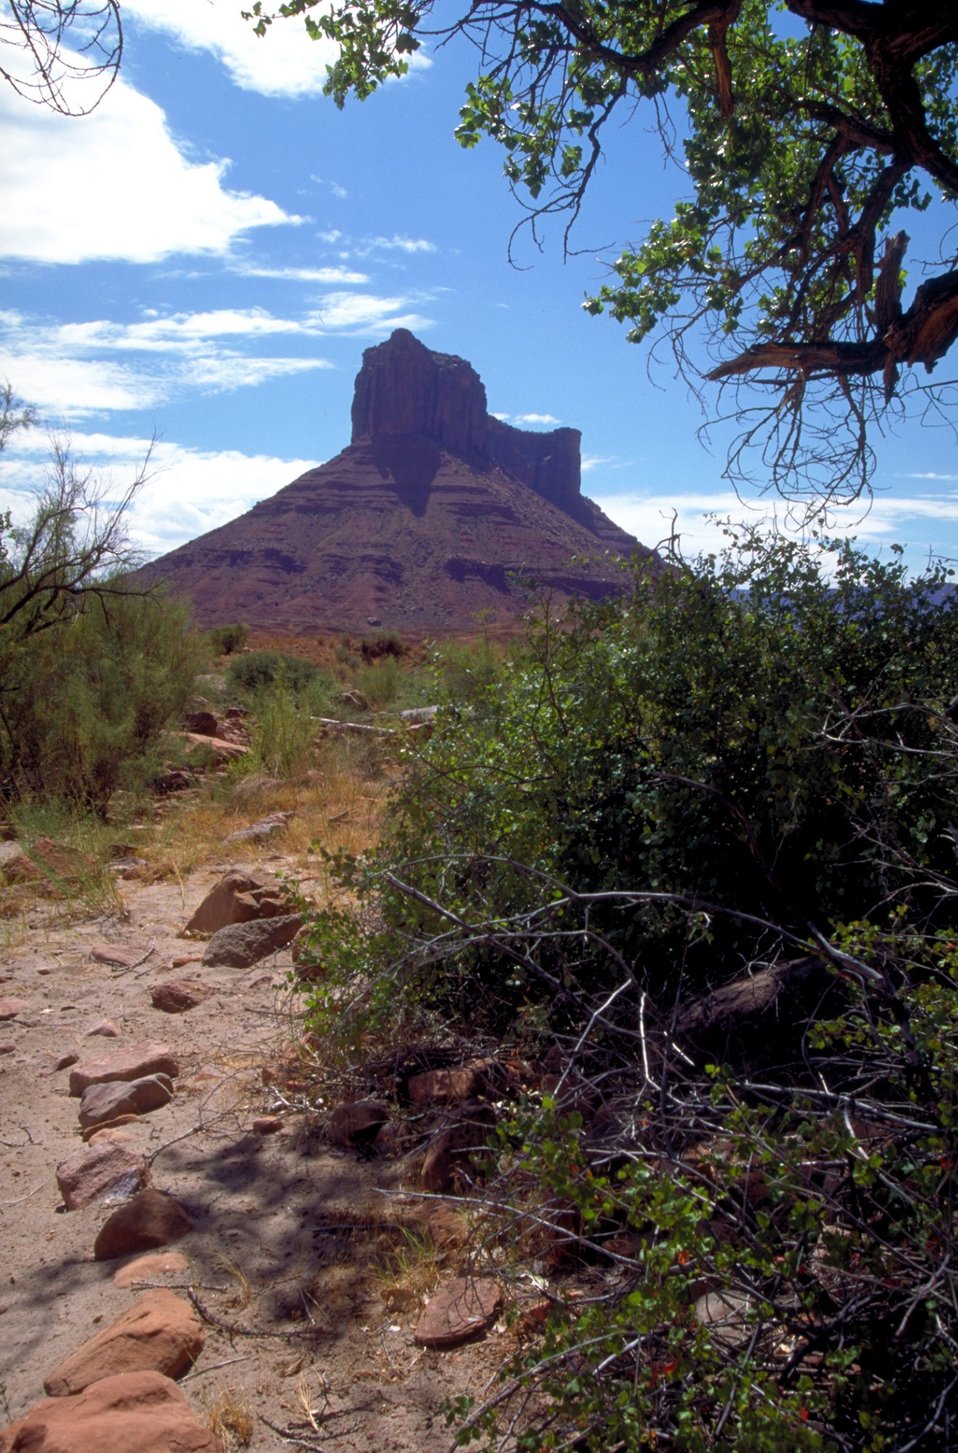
Butte along the Colorado Riverway near Moab, Utah.